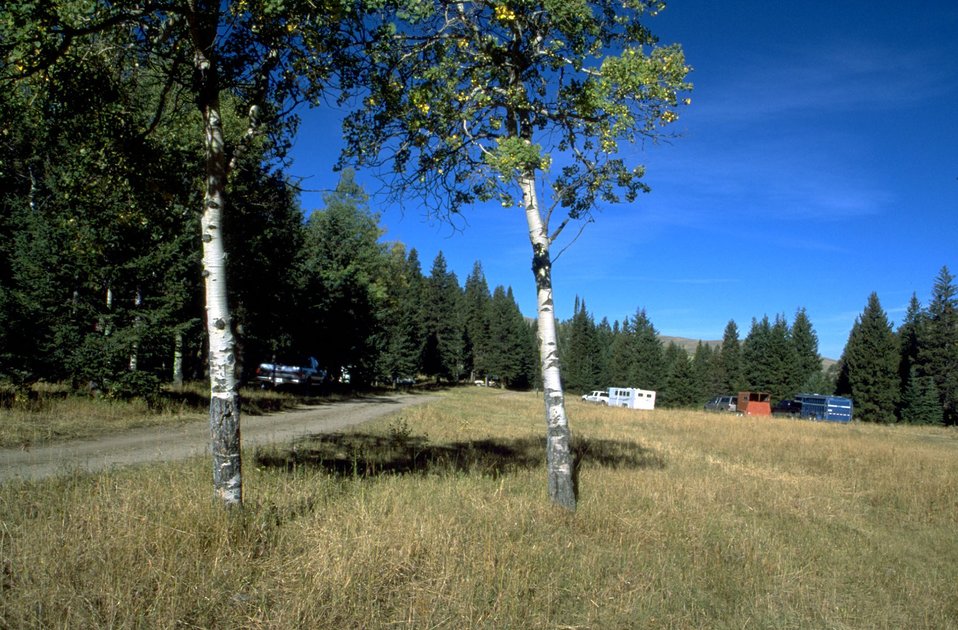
Campers and parking area for horseback trail riders